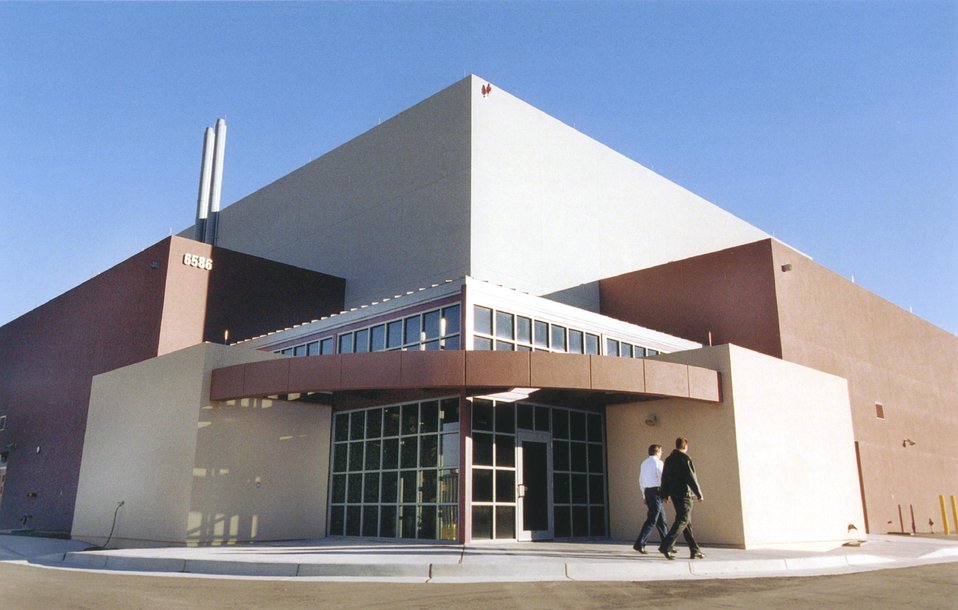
ENTRANCE OF BUILDING THAT HOUSES SNL'S GAMMA IRRADIATION FACILITY'S TEST CHAMBERS.

THE GIF FACILITY CAN BE USED FOR MANY APPLICATIONS, INCLUDING SPACE DEVELOPMENT, MILITARY SYSTEMS VULNERABILITY TESTING AND NUCLEAR REACTOR COMPONENT DEVELOPMENT. THE FACILITY CONTAINS THREE LARGE TEST CELLS, SPACIOUS ENOUGH TO IRRADIATE LARGE OBJECTS SUCH AS TANKS AND SATELLITES, AS WELL AS MIRCOCHIPS FOR THEIR ABILITY TO WITHSTAND THE DAMAGING RADIATION ENVIRONMENTS THEY MAY EXPERIENCE IN SPACE, NEAR STORED NUCLEAR MATERIALS, OR DURING A WARTIME NUCLEAR EXCHANGE.